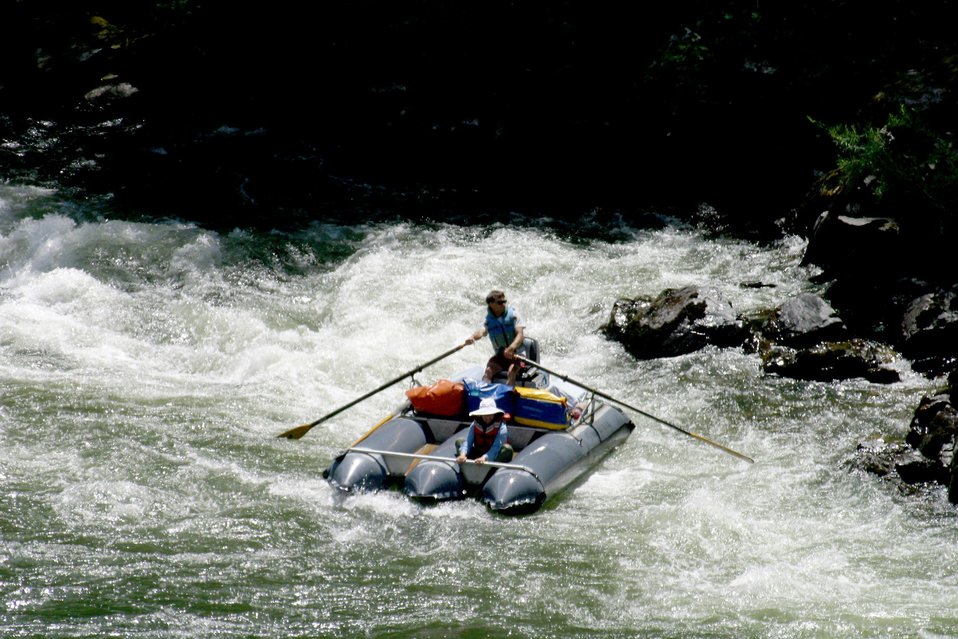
Boater at Grave Creek Falls